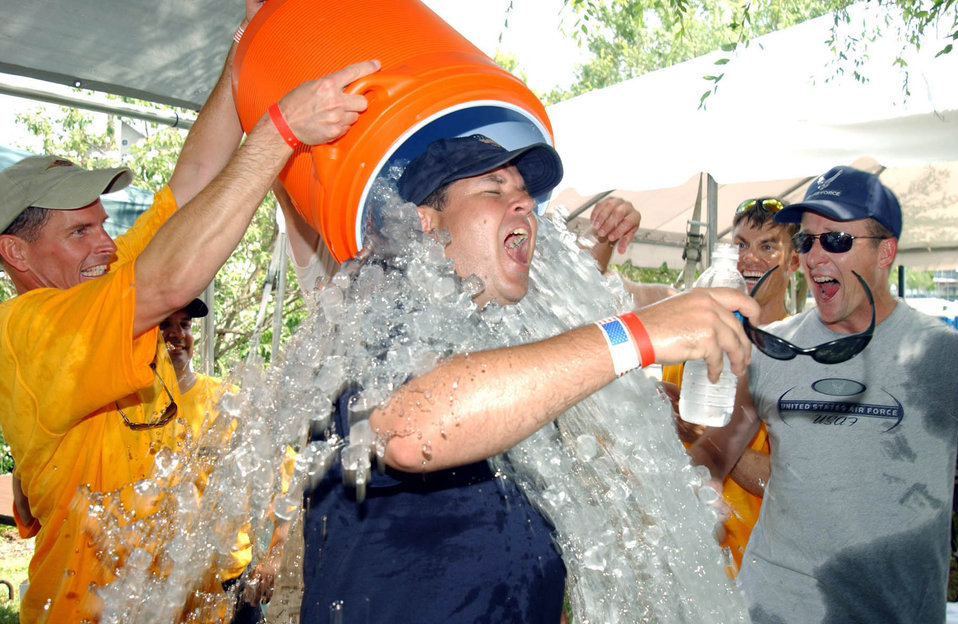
Race to the finish

TAMPA, Fla. -- Maj. Michael Hamill, Air Force team coach for the dragon boat race, gets